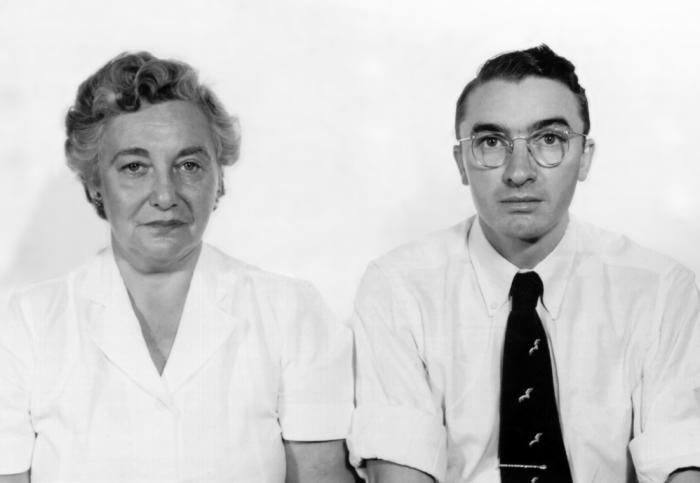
These were CDC employees Mrs. Lenore Peizer (Lt), and Dr. Libero Ajello (Rt).